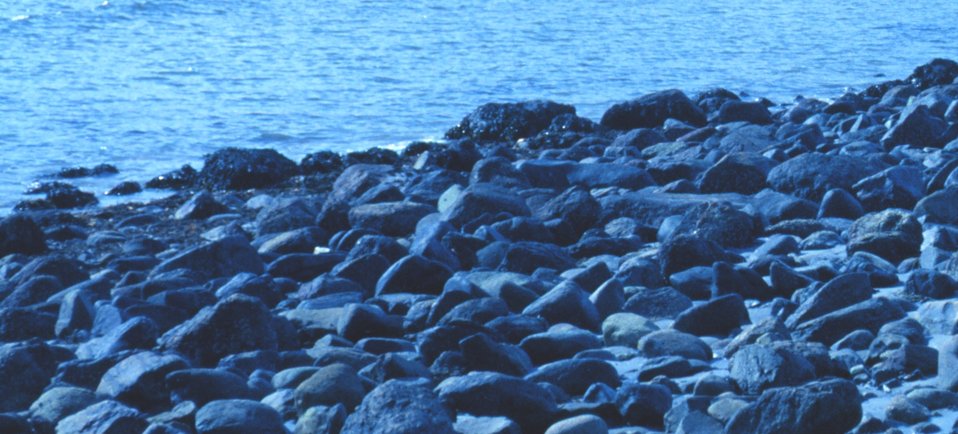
Detail of cobble beach at Odiorne Point State Park.